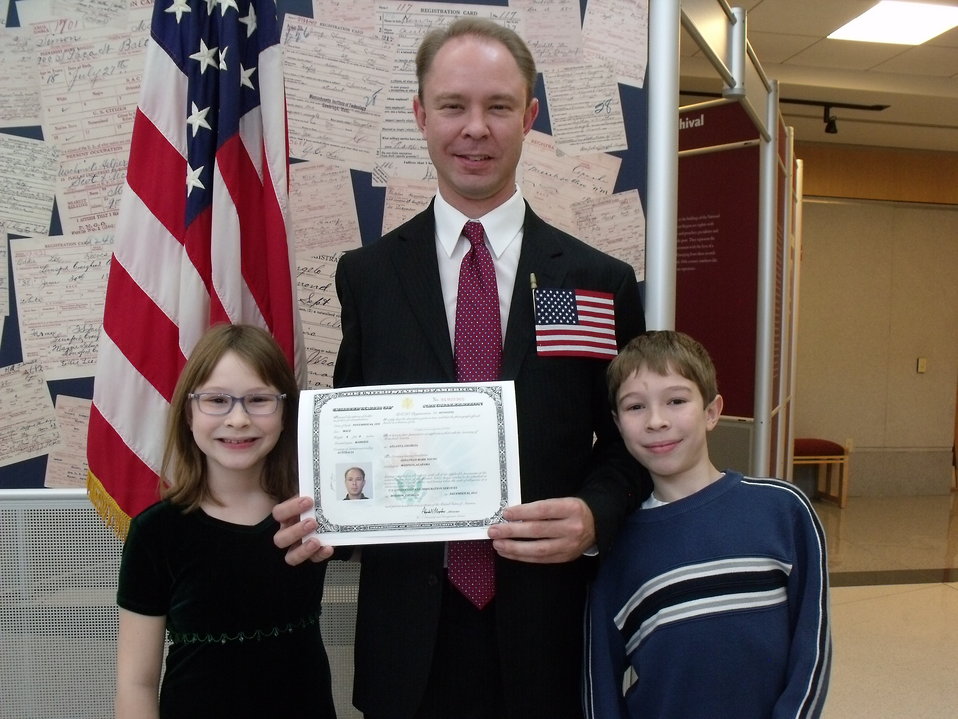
New Citizens